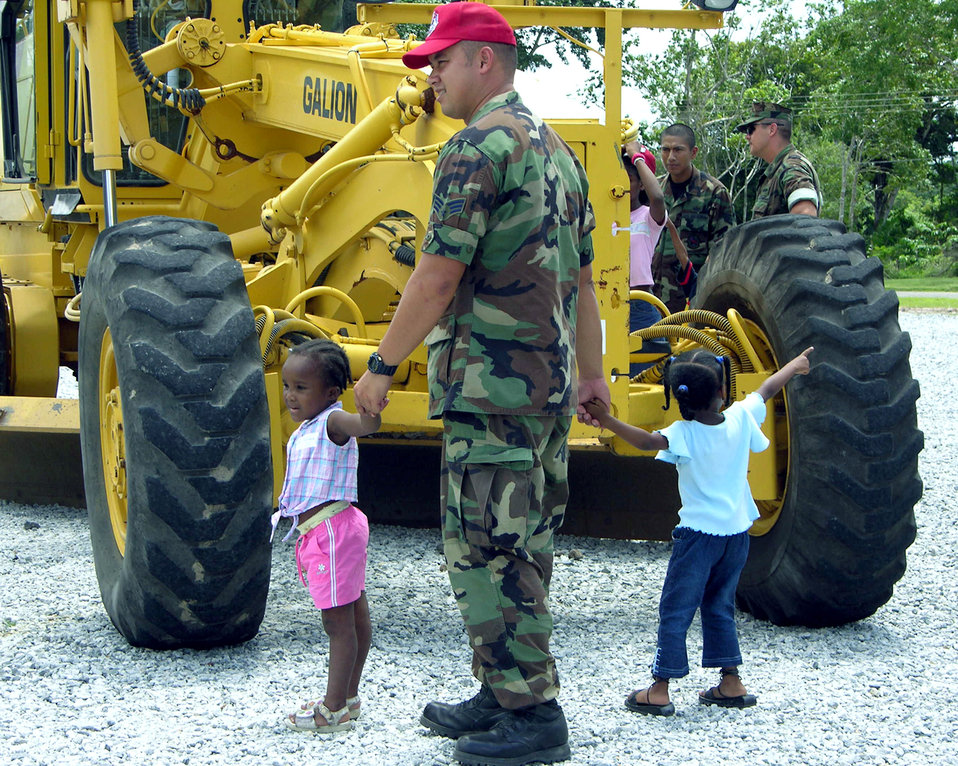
Making the grade

CAMP STEPHENSON, Guyana -- An 820th Red Horse Squadron Airman shows two local girls a road grader here. About 200 U.S. Airmen, Soldiers and Sailors are participating in the joint training exercise co-sponsored by the U.S. Southern Command and the Guyana defense force. A combined team of engineers and medics are working on construction projects and medical-training activities. The girls toured from a local orphanage.